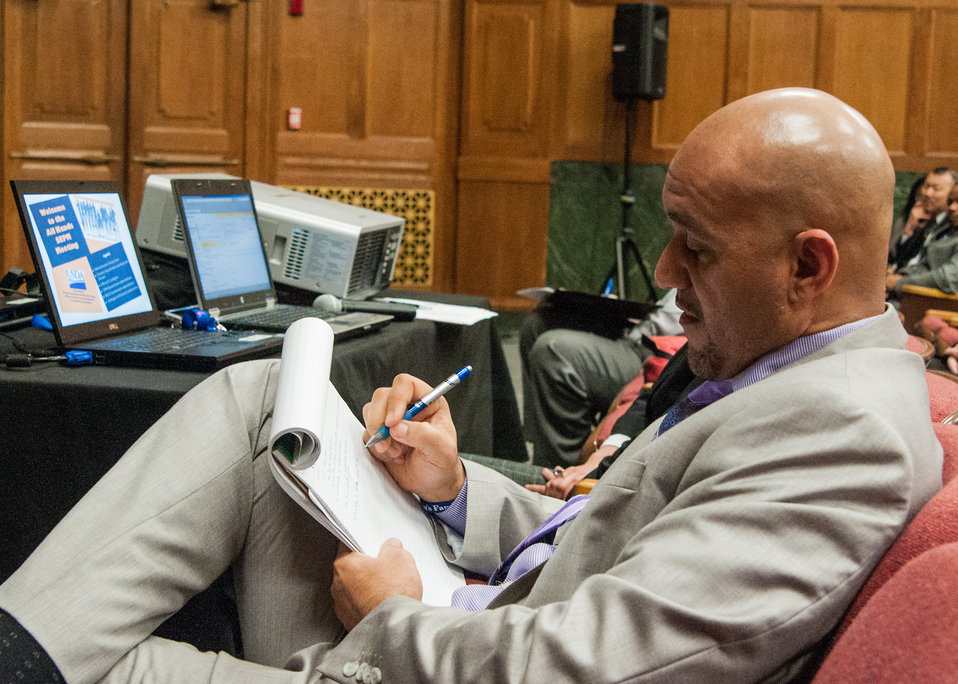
Vincent Loran takes notes at the First Annual All Hands Special Emphasis Program Managers (SEPM) Meeting at the U.S. Department of Agriculture Jefferson Auditorium in Washington, D.C. on Wednesday, Mar. 13, 2013.